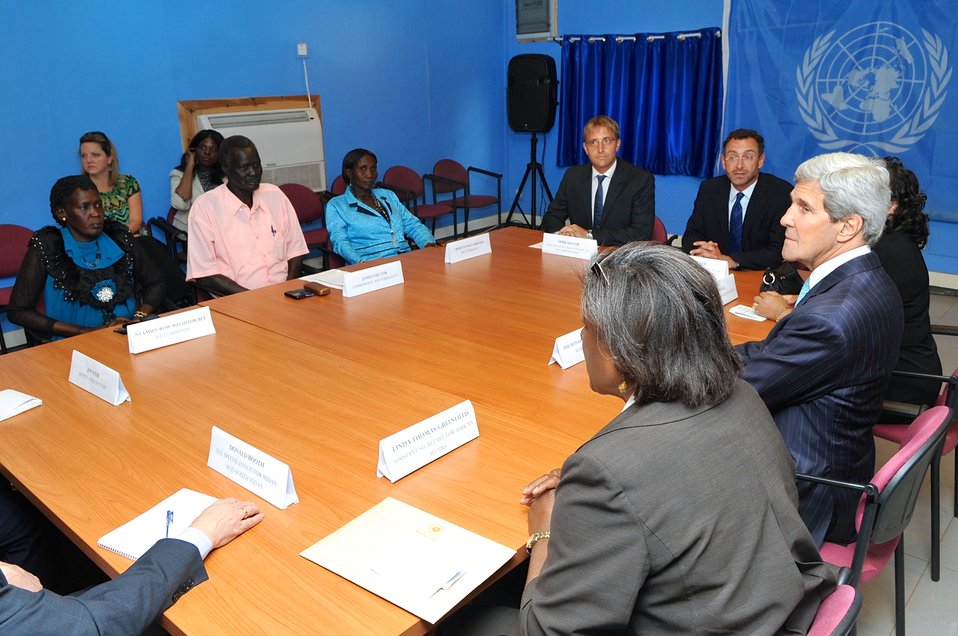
Secretary Kerry Meets With Residents Displaced By Sudanese Civil War

U.S. Secretary of State John Kerry meets on May 2, 2014, with several residents of South Sudan who now live in a United Nations camp in Juba after being displaced by their country’s civil war.